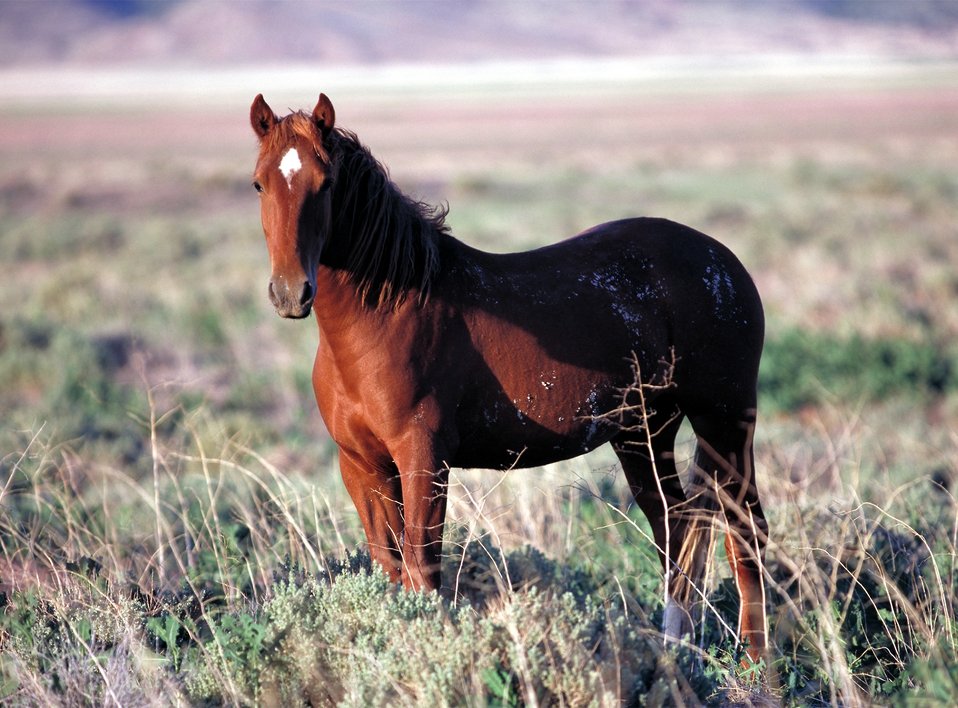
Onaqui Herd near Dugway, Utah.